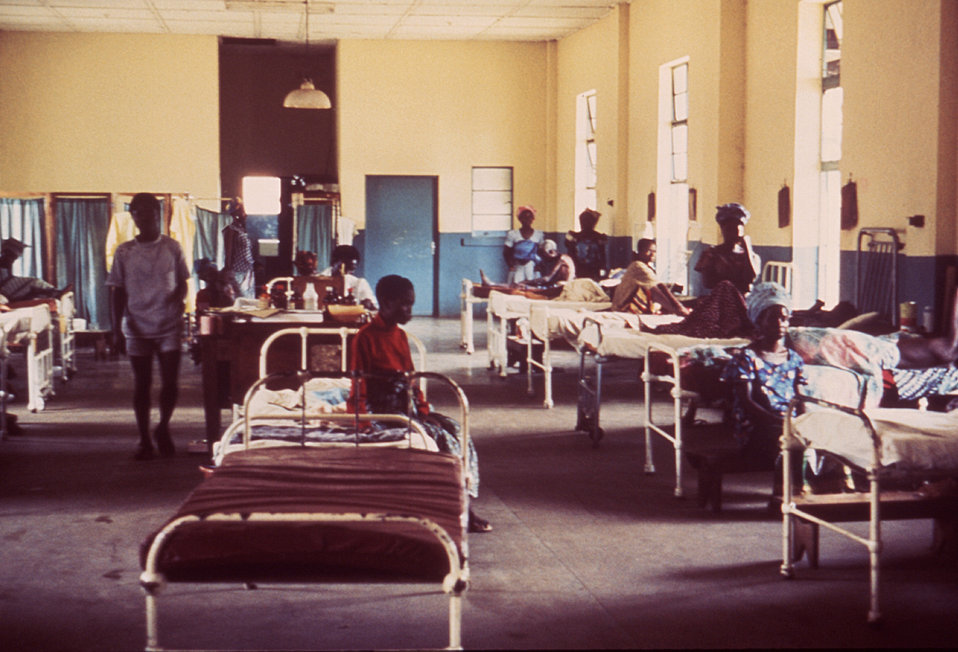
This 1977 image depicts the female hospital ward housing those affected by Lassa fever in Segbwema, Sierra Leone.